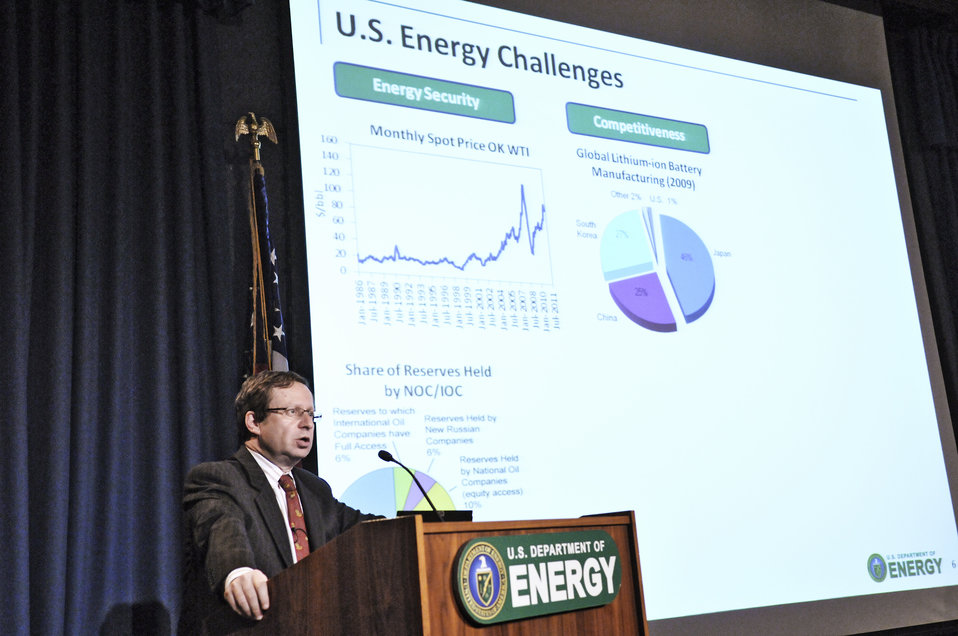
Dr. Steve Koonin releases the results of the the Department of Energy's Quadrennial Technology Review.